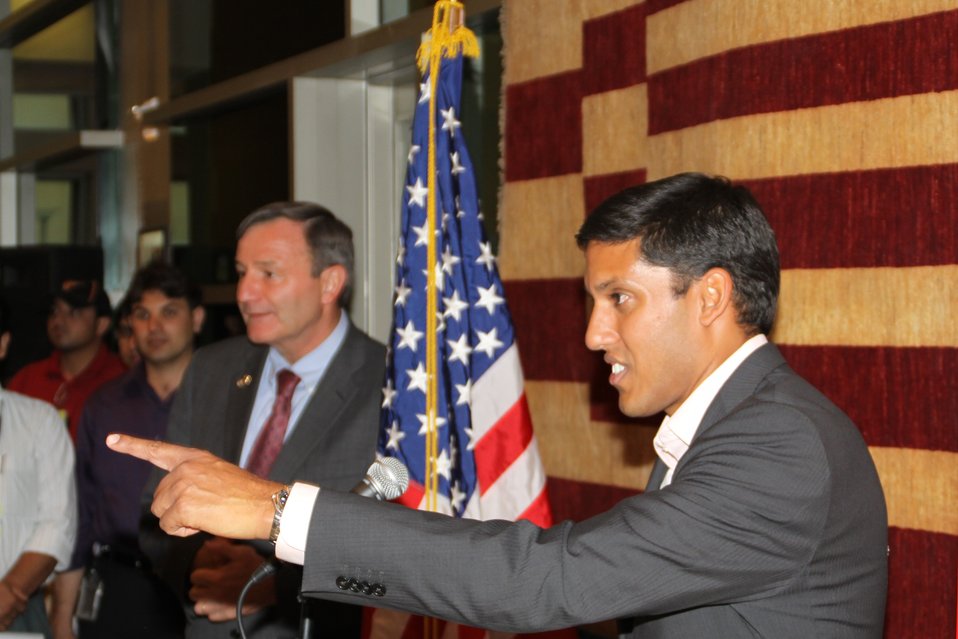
US Embassy Town Hall July 21, 2010